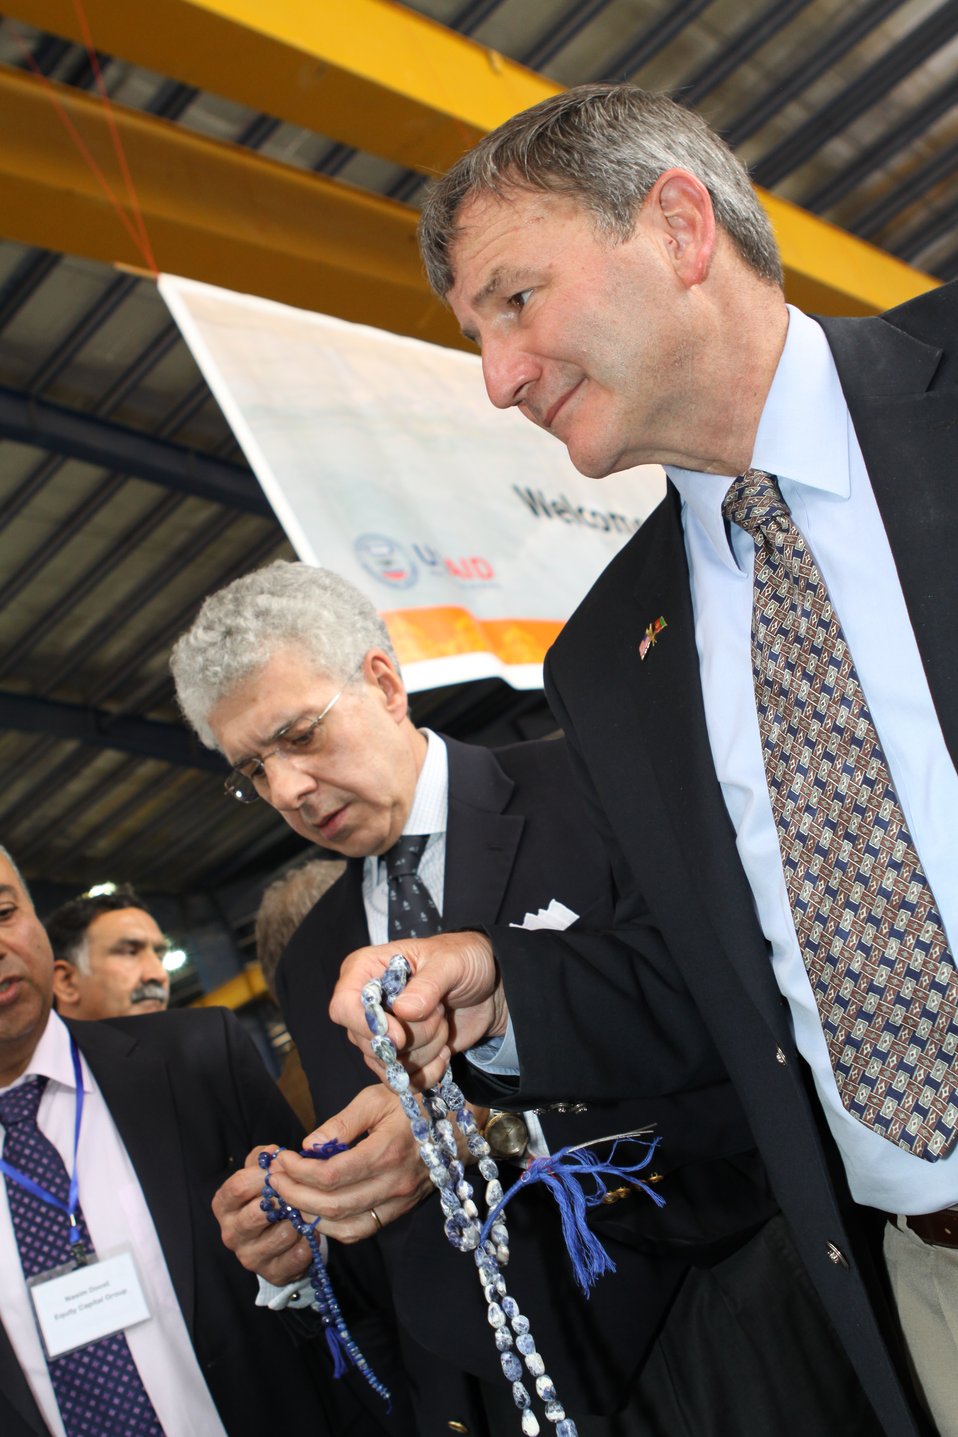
100525 Hirat Marble Conference 497